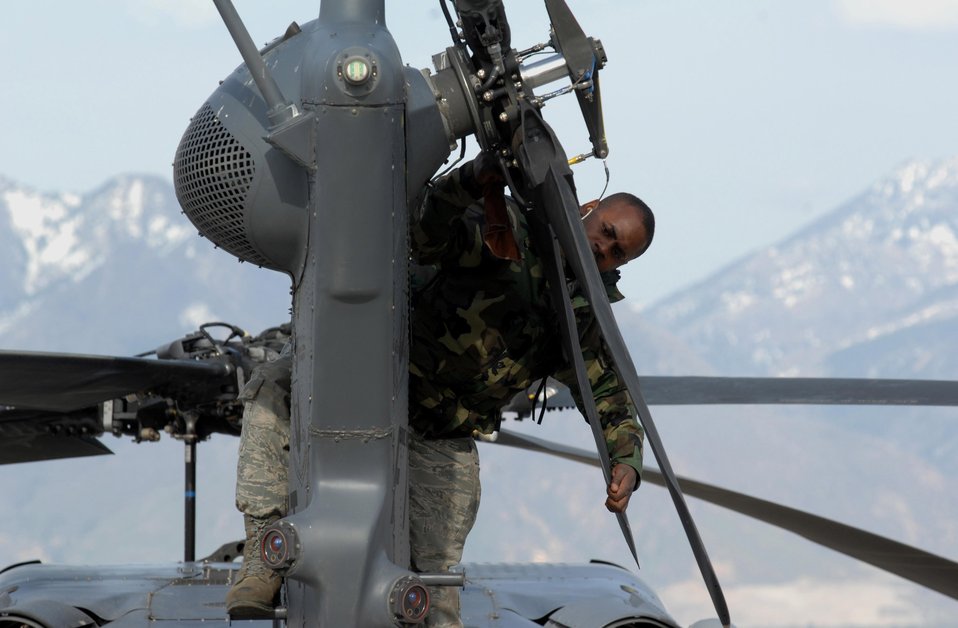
Let's twist

During a combat search and rescue exercise May 9, Staff Sgt. Melvin Simmons inspects an HH-60 Pave Hawk tail assembly at the Utah National Guard's training center.